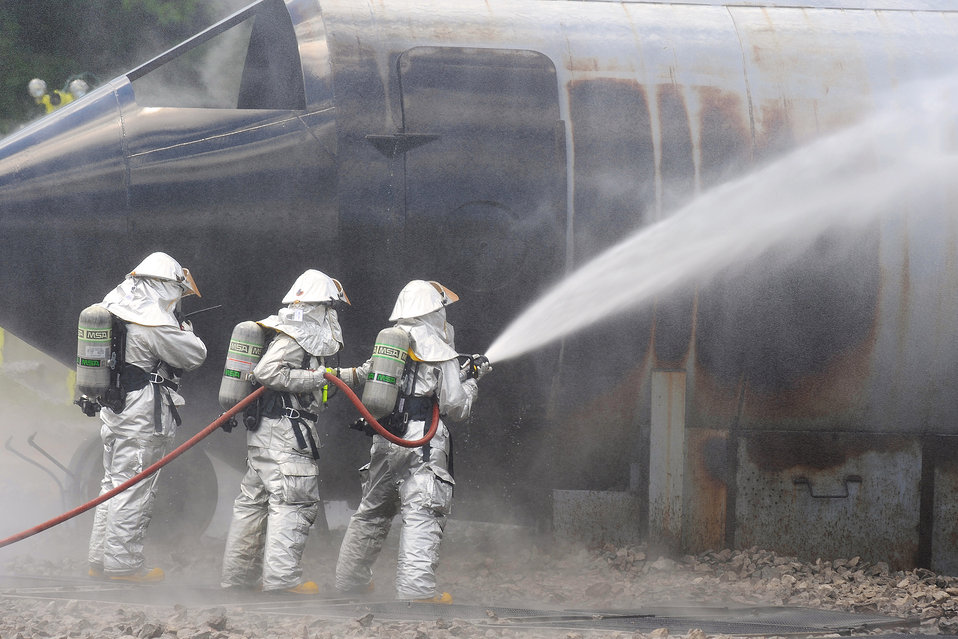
Guard firefighters train for emergencies

Keeping a steady stream of water, firefighters battle a live fire while participating in an aircraft 'crash' drill July 21, 2010, at the Combat Readiness Training Center in Alpena, Mich. The firefighters are with the Michigan Air National Guard's 127th Wing at Selfridge Air National Base.